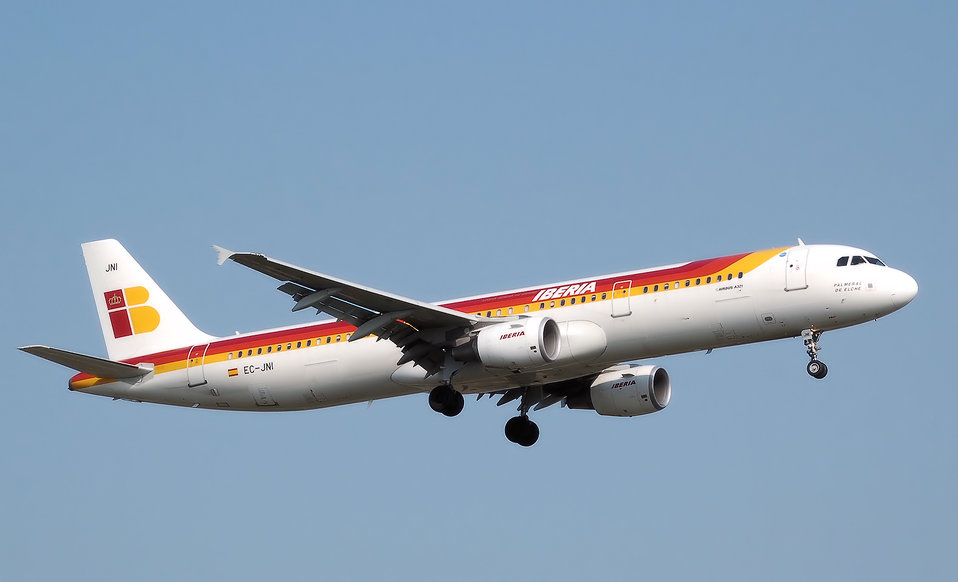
Iberia.a321-200.ec-jni.arp